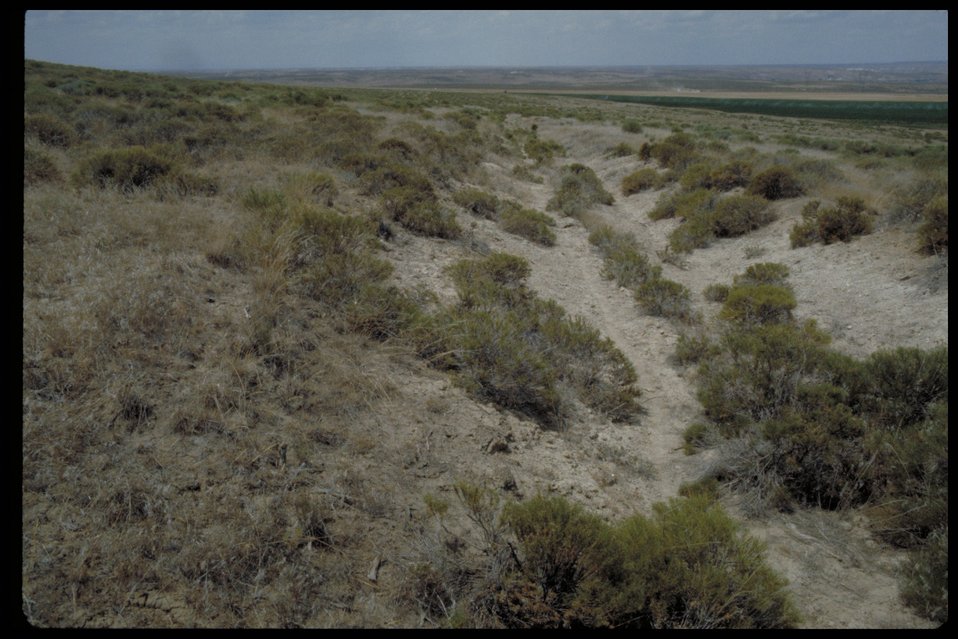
Oregon Trail Lower Snake River District